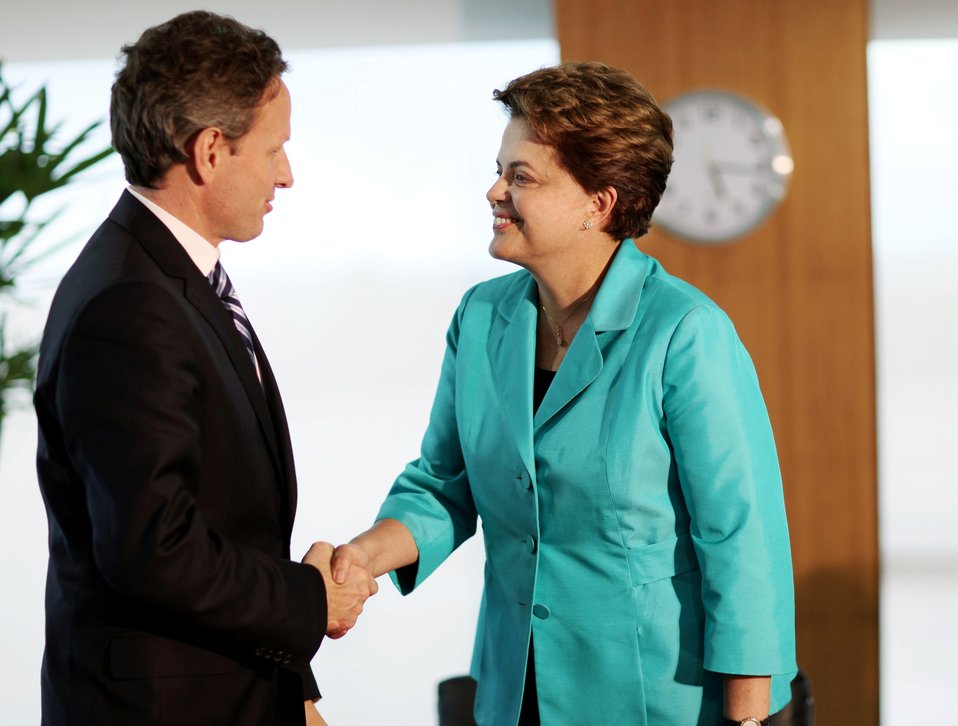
Secretary Geithner Travels to Brazil, 02/07/2011

On Monday, February 7, 2011, Secretary Geithner met with Brazilian President Dilma Rousseff in Brasilia, Brazil to consult on shared bilateral and G-20 objectives and to highlight the importance of economic and financial cooperation with the Government of Brazil.